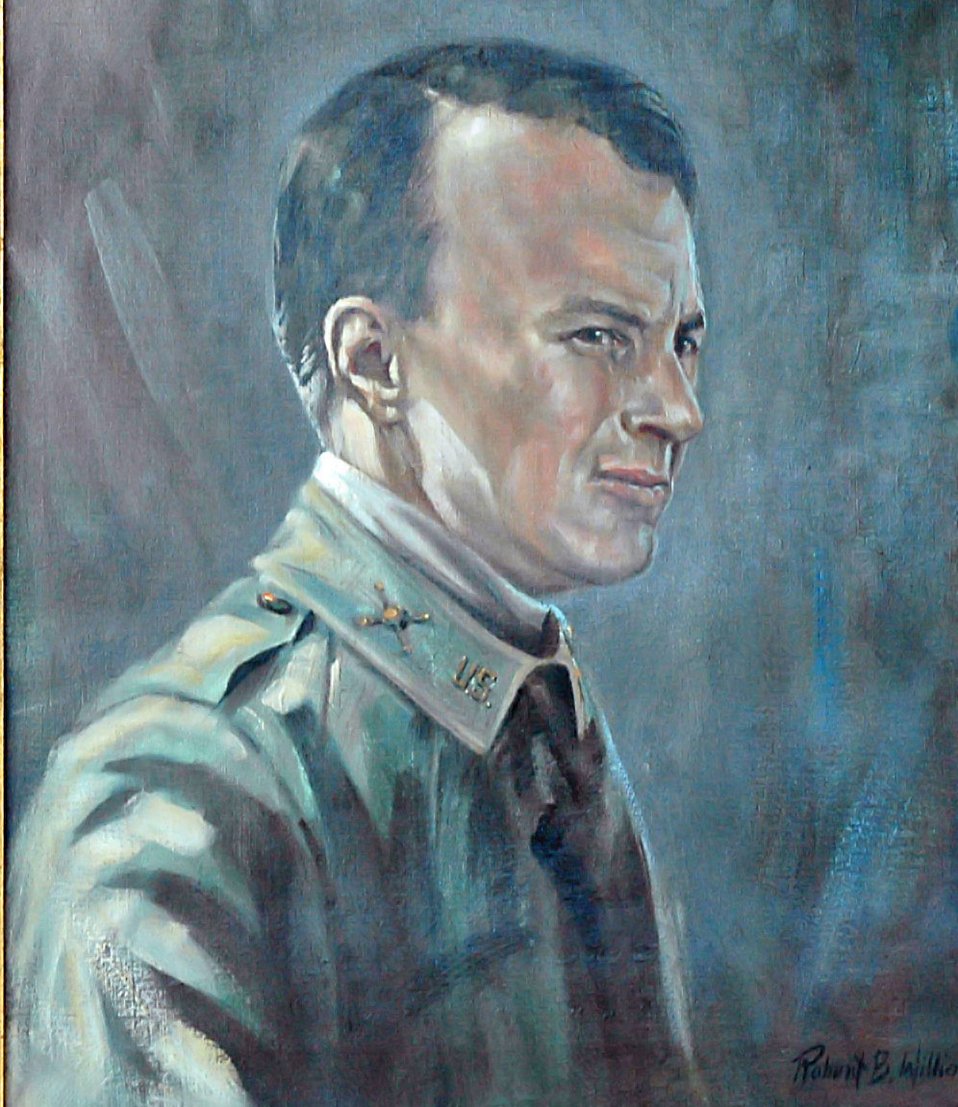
Lt. Thomas E. Selfridge is recorded as the first person to die in a modern airplane crash. He was flying as a passenger with Orville Wright Sept. 17, 1908, at Fort Myer, Va.